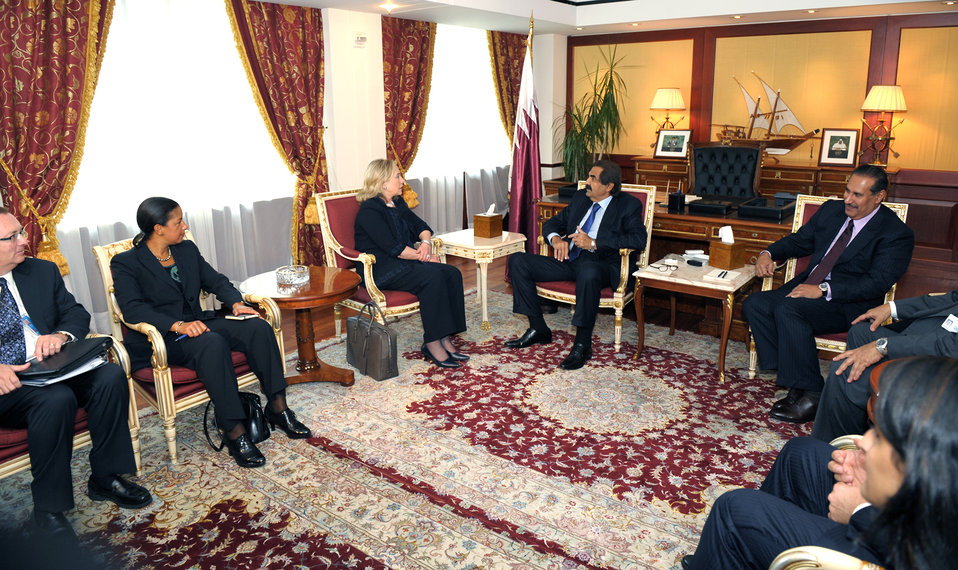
Secretary Clinton Meets With Qatari Amir Hamad bin Khalifa al-Thani

U.S. Secretary of State Hillary Rodham Clinton holds a bilateral meeting with Qatari Amir Hamad bin Khalifa al-Thani, at the Qatari Mission to the UN in New York, New York, on September 22, 2011.